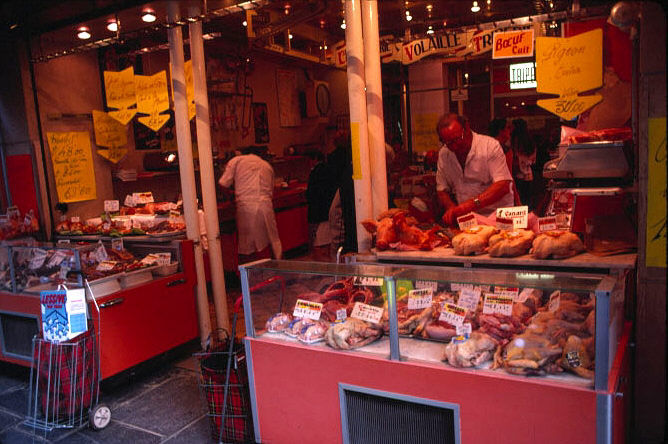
Butcher shop in Paris, France.